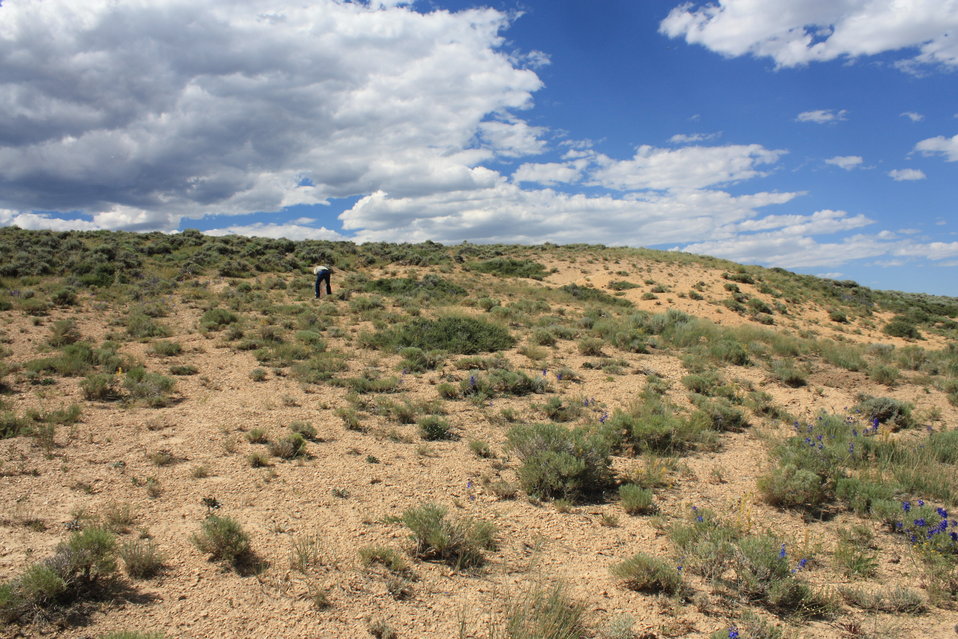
North Park phacelia habitat

North Park phacelia grows on barren sandy soils in North Park, Colorado near the town of Walden.

Photo credit: USFWS
...........................................................................

BACKGROUND:
North Park phacelia (Phacelia formosula), a member of the waterleaf family (Hydrophyllaceae) is found in “North Park” of north central Colorado, near the small town of Walden. The bright purple flowers and lobed leaf margins make this species easy to spot in July and August. The plant is a biennial, surviving for one year as a rosette of leaves before flowering and dying the following year. The plant is found on barren exposures of the Coalmont Formation that are easily eroded (see the habitat pictures). Roughly 16,000 individuals are known from six separate populations and the entire species is known from an area measuring roughly 10 miles in either direction (north to south, east to west).

The species was discovered, at one location, in 1918 by the Colorado botanist, George Osterhout. Additional sites were not located until 1979. Because of the limited distribution, small population sizes and threats to the species, North Park phacelia was listed as endangered under the Endangered Species Act in 1982. Threats to the species today include: heavy livestock use, off-road vehicle traffic, oil and gas development, residential development, a lack of regulatory mechanisms, and potential effects from climate change.

Genetic and taxonomic research into the species’ relationships with close relatives in Larimer and Grand counties is underway. Further locations of these Phacelia are being sought to better understand these relationships.

Several populations of North park phacelia occur either partially or wholly on private and State lands. Conservation actions on these properties are voluntary. Funding is available to landowners wanting to conserve the species. Please contact Gina Glenne or Ellen Mayo at 970-243-2778 for further information on this species and ways that you can help with conservation and recovery.